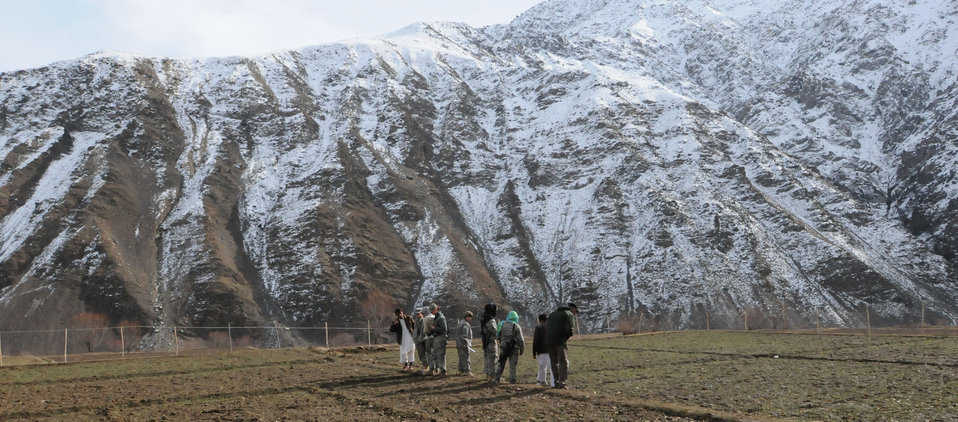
Visiting Afghan women

Several servicemembers from a Provincial Reconstruction Team at Bagram Airfield, Afghanistan, traveled to Forward Operating Base Lion in the Panjshir Valley to meet with Afghan women there. During their visit they had the opportunity to view a field planted with saffron. The plant has been introduced to the Afghan women as a means to supplement their income and increase their livelihood.